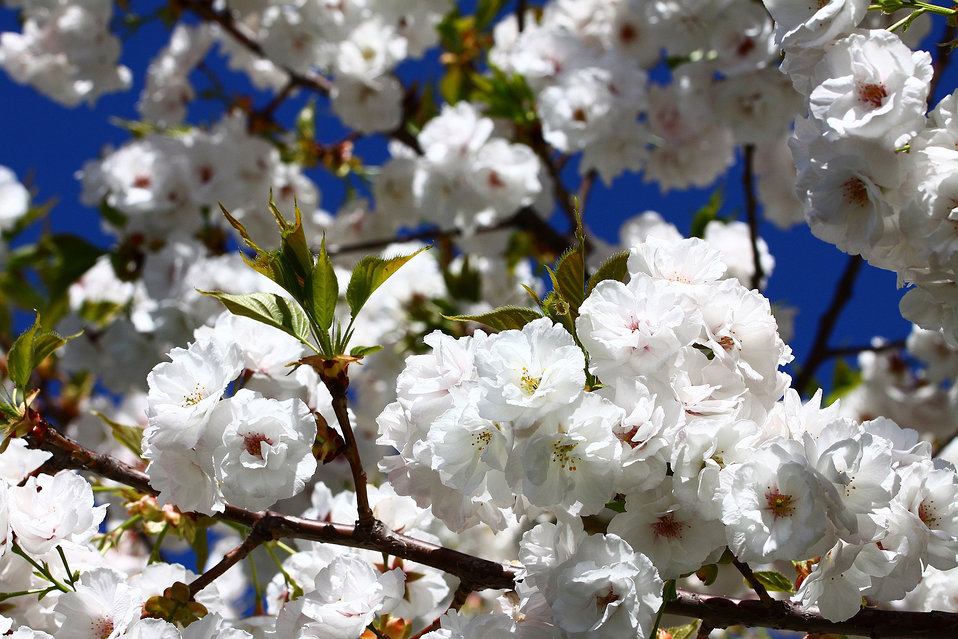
Spring in the air

Trees are blooming.